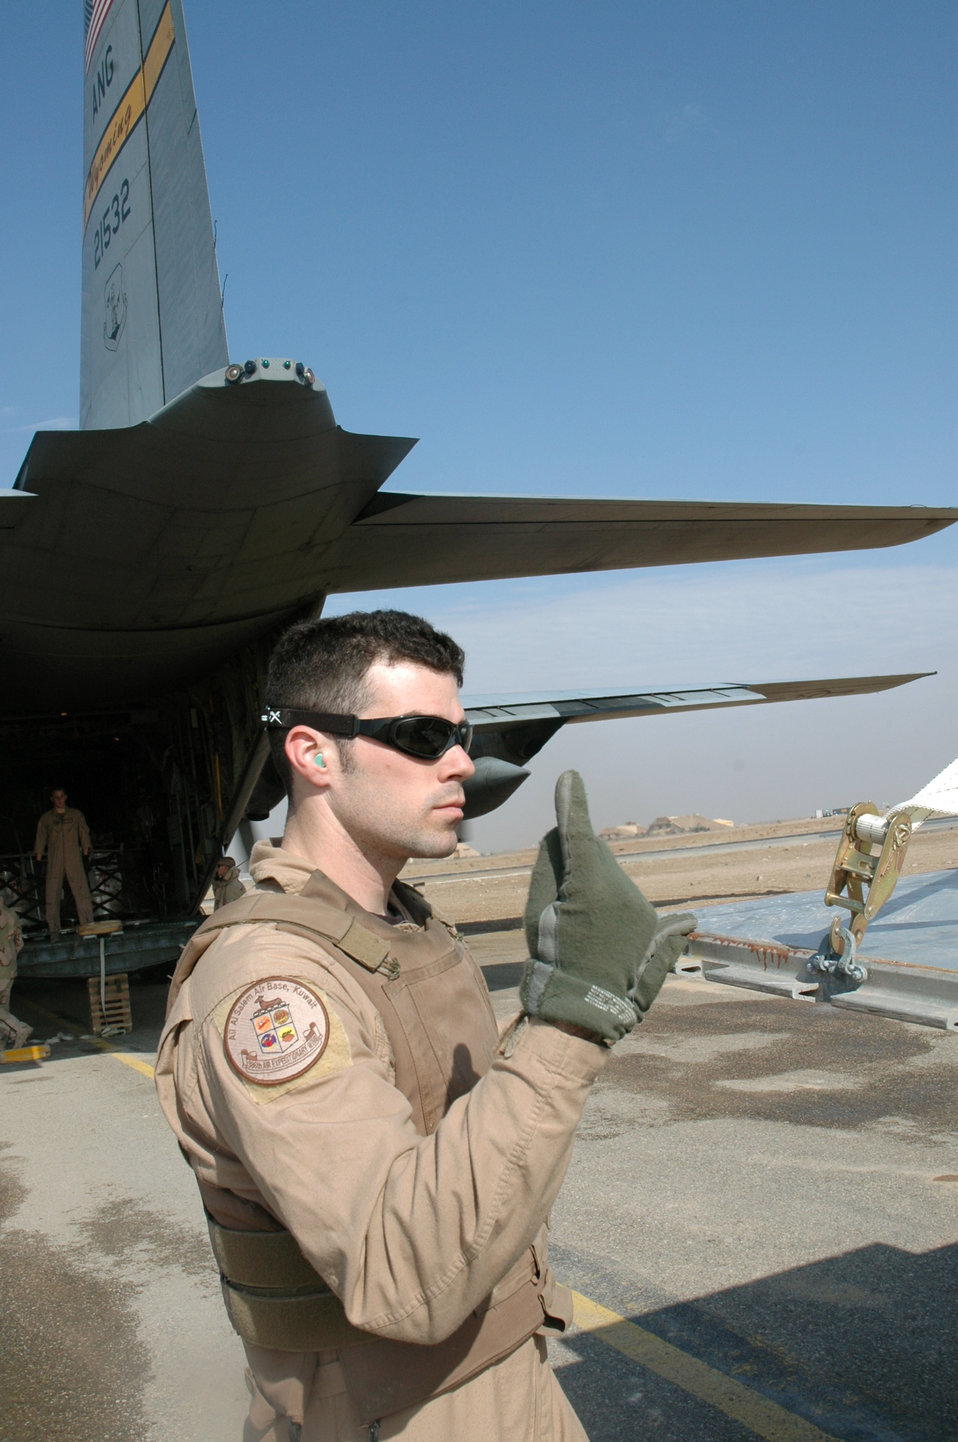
C-130 airlift reduces ground convoy operations

SOUTHWEST ASIA (AFPN) -- Senior Airman Jon Hall directs a forklift driver while loading a C-130 Hercules. He is a loadmaster with the 777th Airlift Expeditionary Squadron.